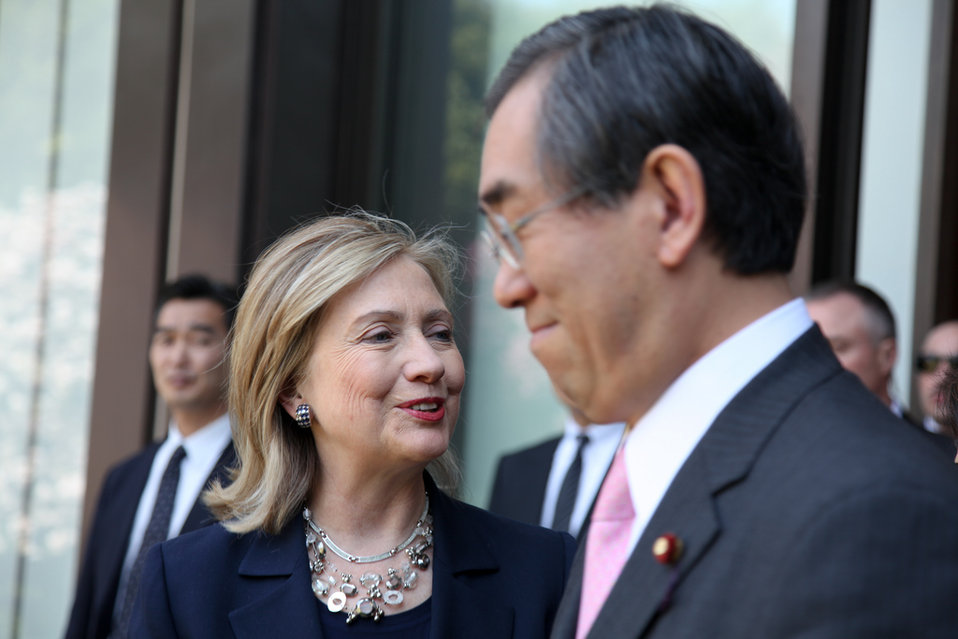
Secretary Clinton Speaks With Japanese Foreign Minister Matsumoto

U.S. Secretary of State Hillary Rodham Clinton speaks with Japanese Foreign Minister Takeaki Matsumoto in Tokyo, Japan, on April 17, 2011.